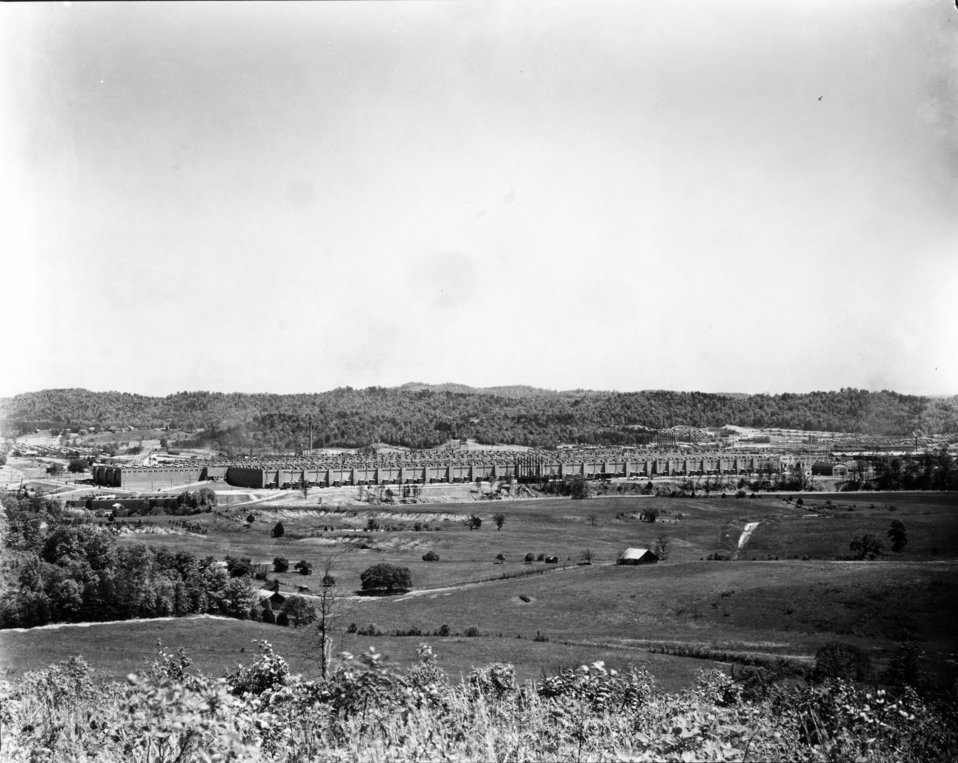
K-25 at Oak Ridge